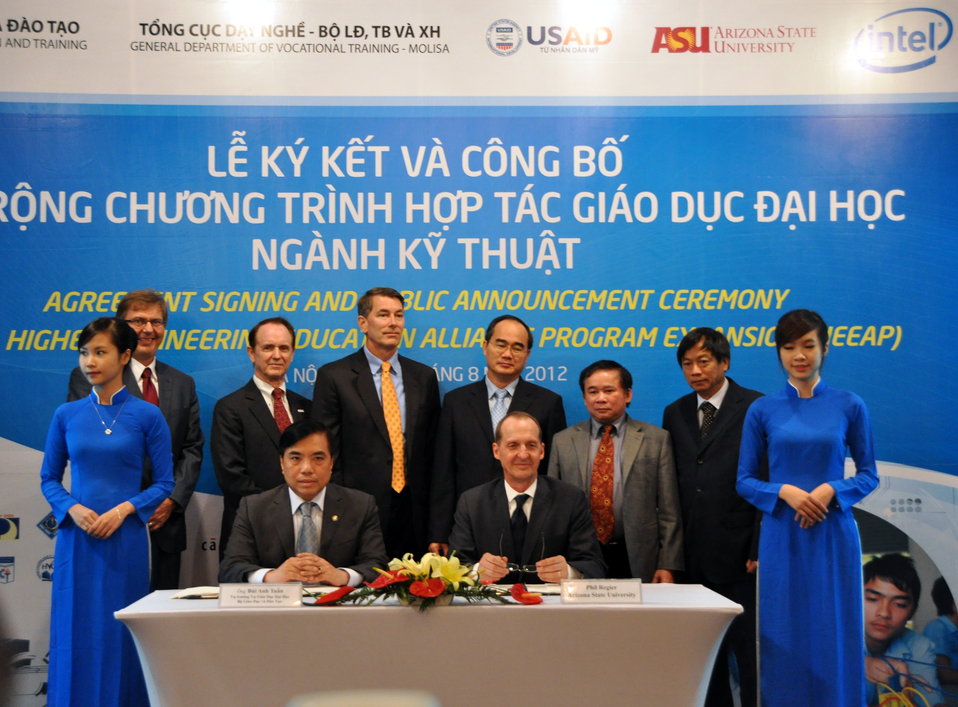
Higher Engineering Education Alliance Program Expansion Launch

Hanoi, August 20, 2012.